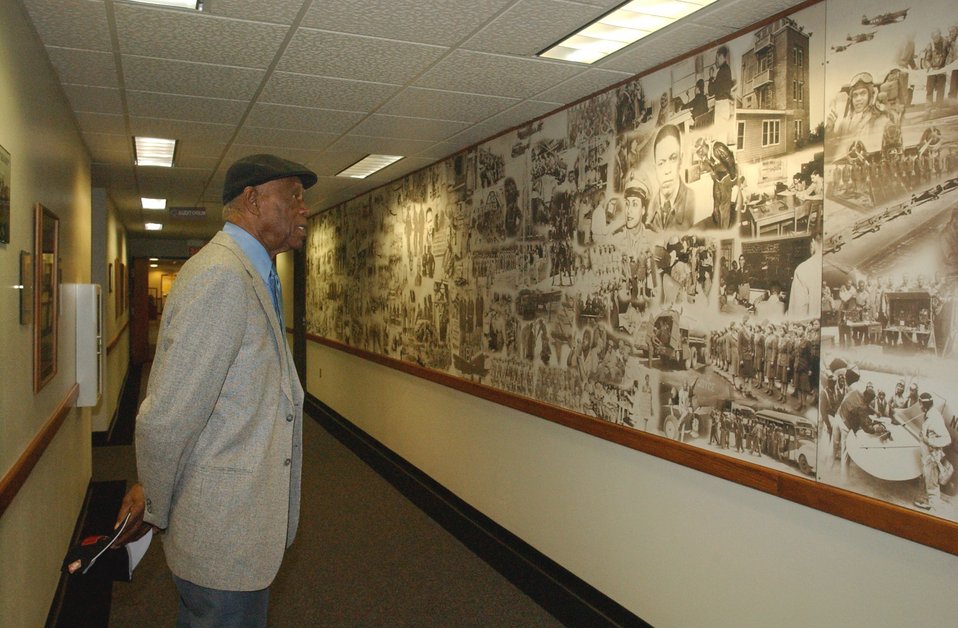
Tuskegee Airman visits former unit

RANDOLPH AIR FORCE BASE, Texas (AFPN) -- John Miles looks at the Tuskegee Airmen heritage wall at the 99th Flying Training Squadron. He recently visited the unit he was assigned to in the 1940s.